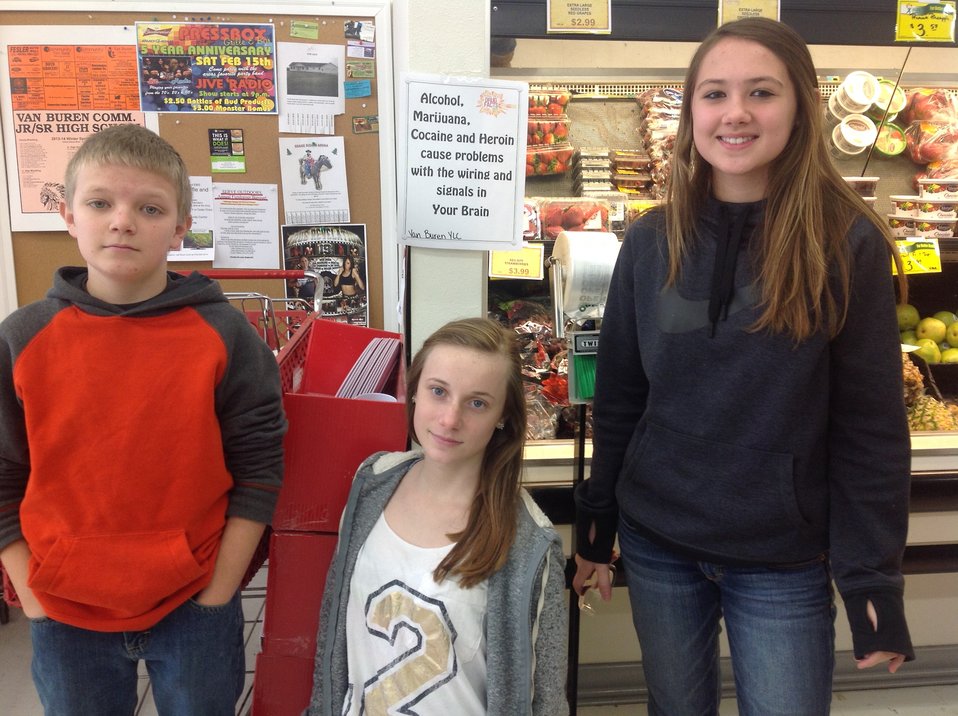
I'm Shattering the Myths Because...

Teenagers from the Van Buren County SAFE Coalition's, Youth Leadership Council (YLC) in Keosauqua, Iowa participate in various events during National Drug Facts Week, 2014.